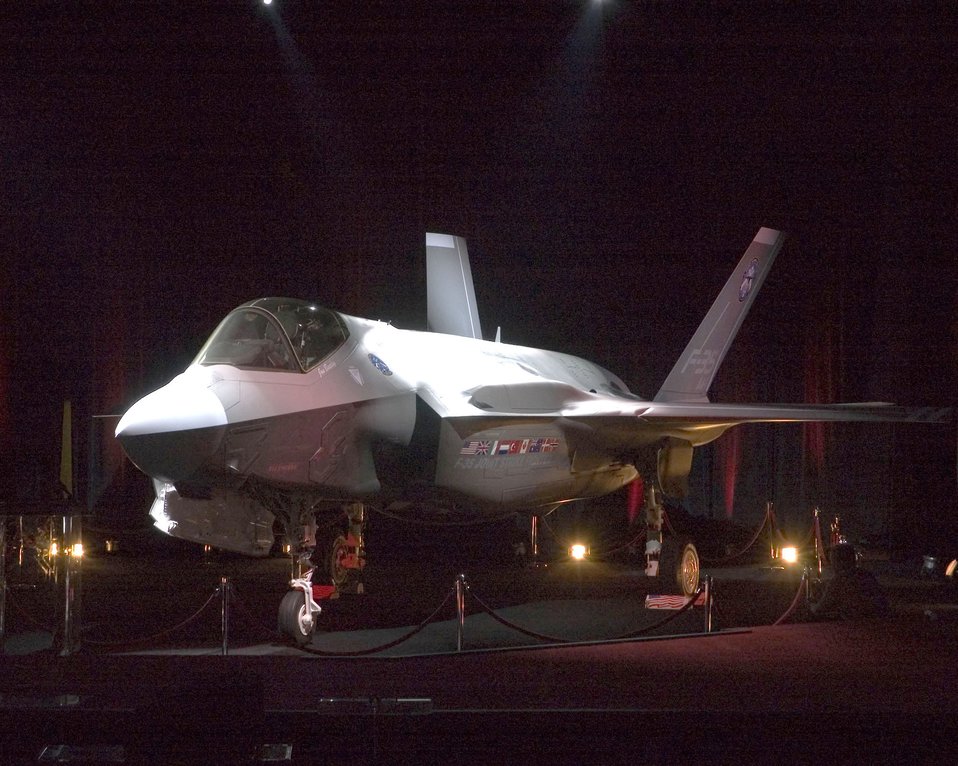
Air Force proposes initial Joint Strike Fighter locations

Air Force officials announced Oct. 4 the F-35 Lightning II will be initially located at seven military installations. The initial Joint Strike Fighter locations are Eglin Air Force Base, Fla.; Nellis AFB, Nev.; Edwards AFB, Calif.; Hill AFB, Utah; Kadena Air Base, Japan; and Shaw AFB/McEntire Air National Guard Base, S.C. The Joint Strike Fighter is a fifth-generation, supersonic stealth fighter designed to replace a wide range of existing aircraft for the U.S. and eight partner nations.